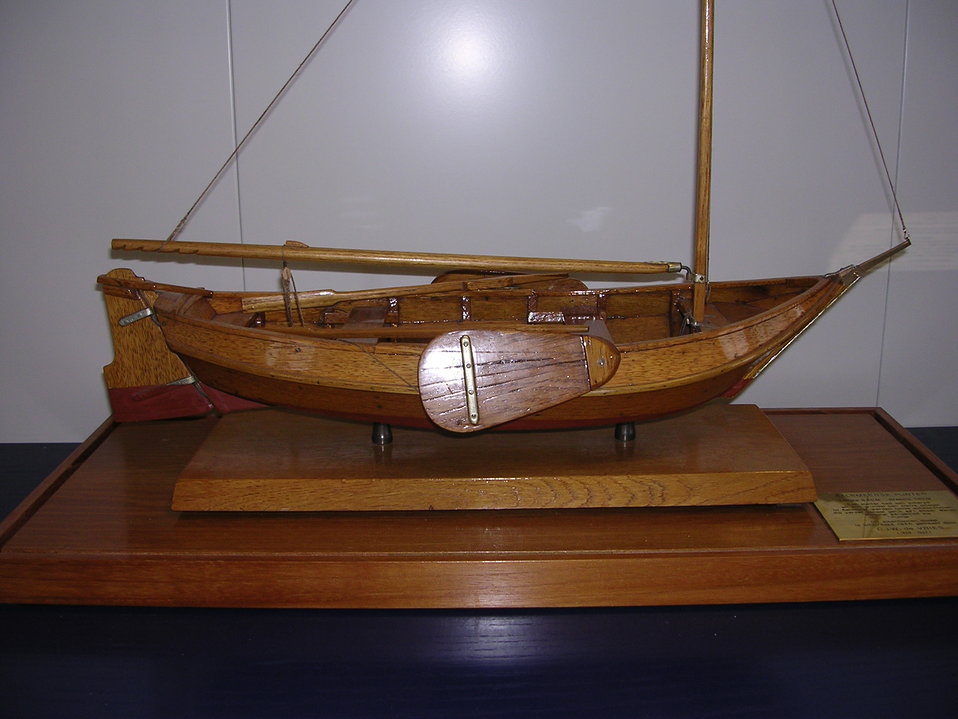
Houten grundel model van C.J.W. de Vries Bron: eigen foto 2006 H.J. de Vries eigen foto